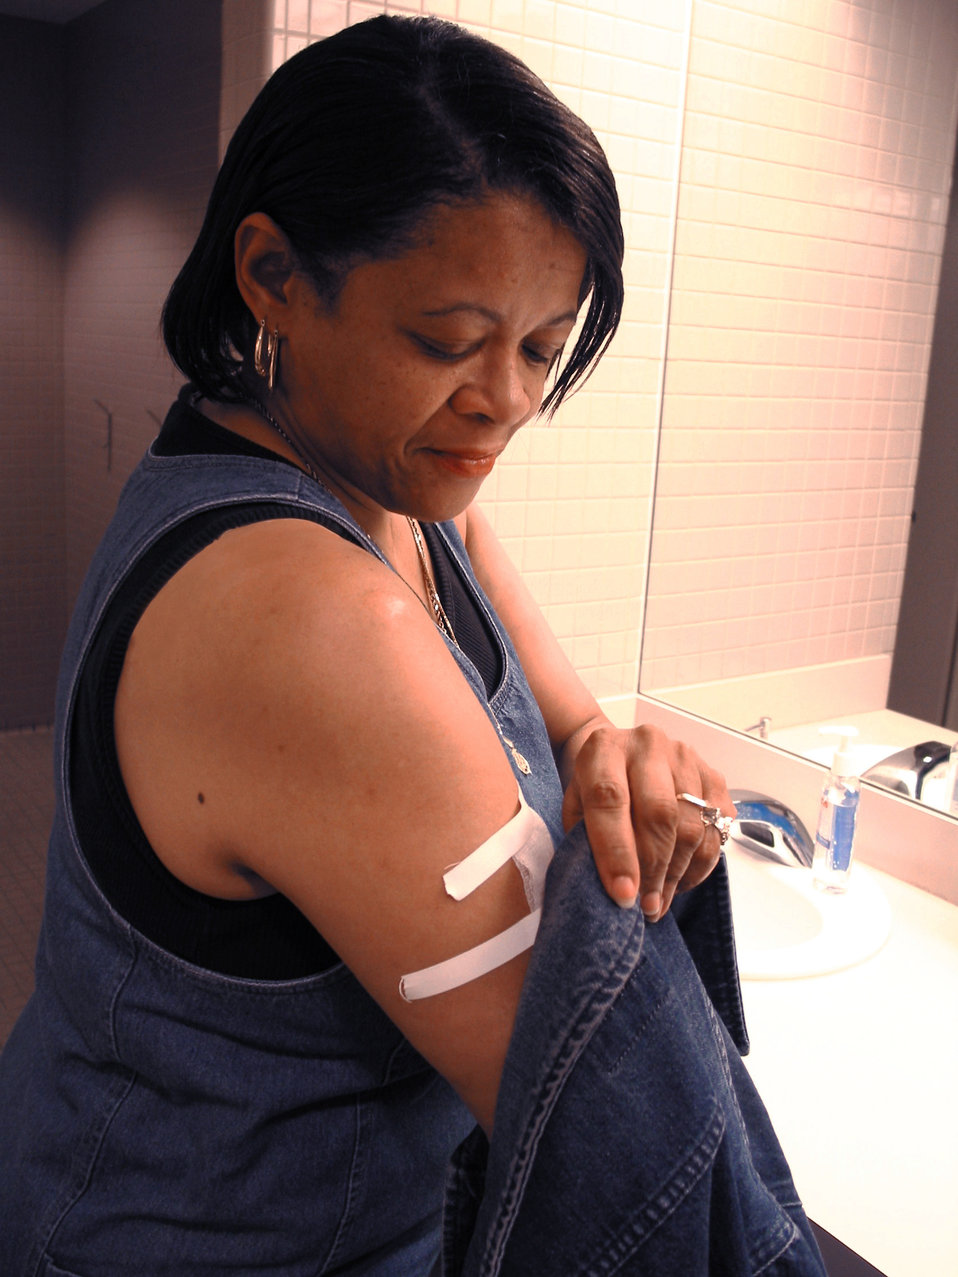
This smallpox vaccinee is shown covering the bandaged vaccination site with additional clothing.